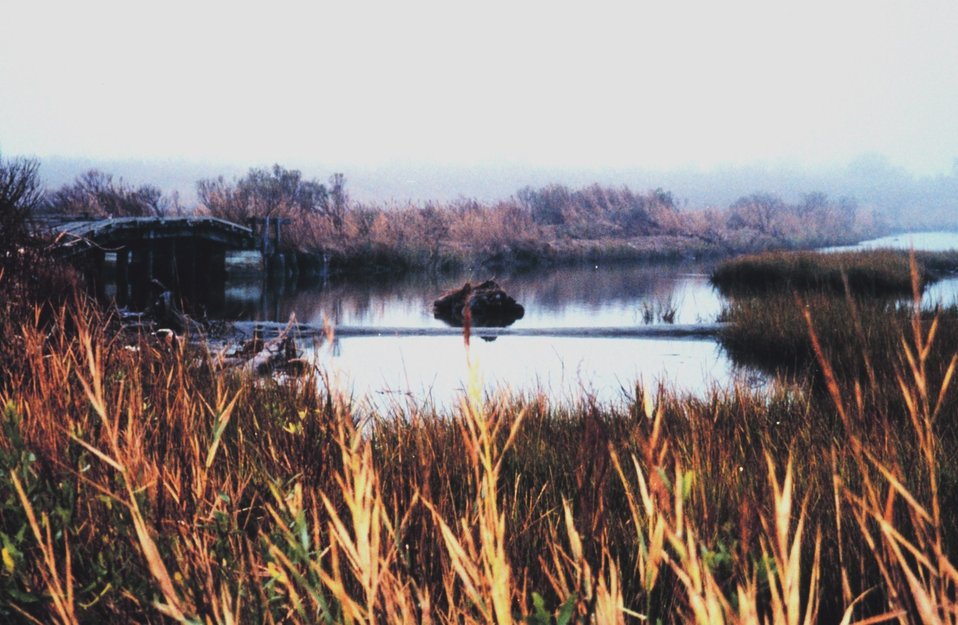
Early morning fog over a Port Isobel Island marsh.